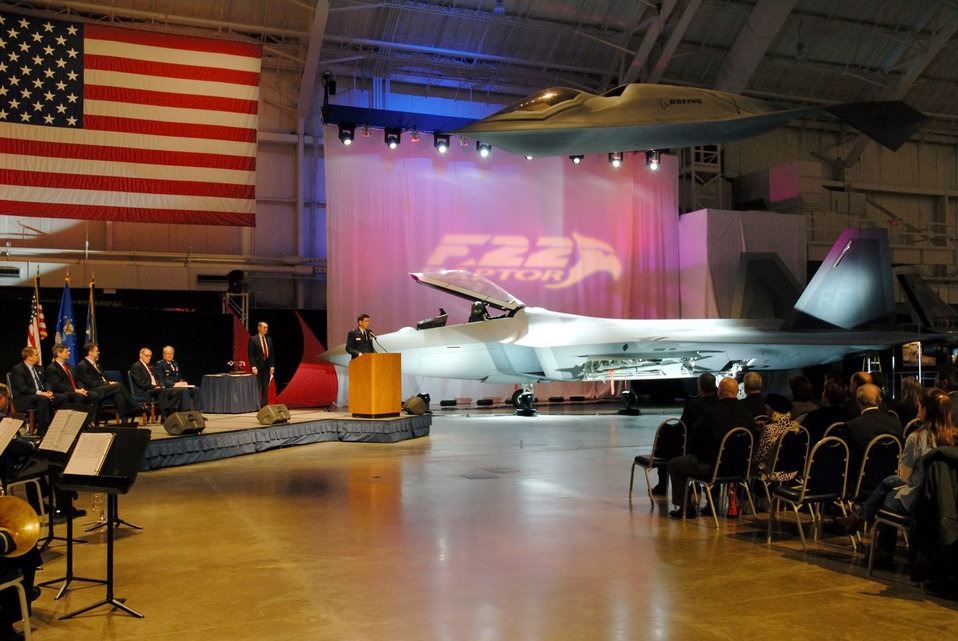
Museum unveils F-22 public display

Brig. Gen. C.D. Moore II addresses the crowd during the F-22 Raptor Exhibit Opening Ceremony at the National Museum of the U.S. Air Force Jan. 18 at Dayton, Ohio. General Moore is the 478th Aeronautical Systems Wing commander at Wright-Patterson Air Force Base, Ohio.